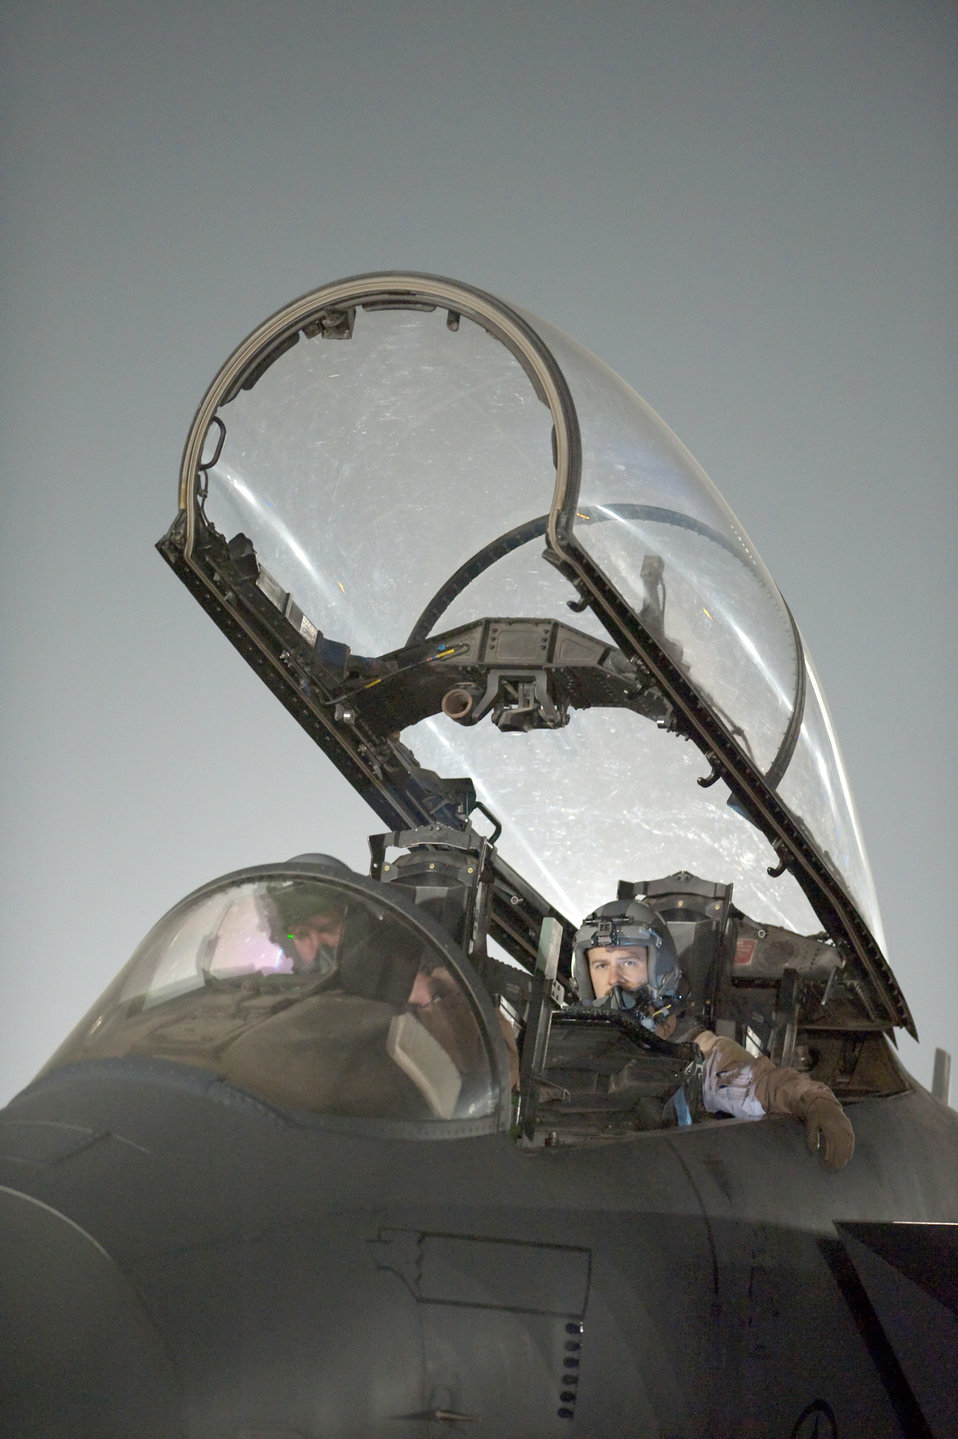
Mission preparation at Bagram

Capt. Kellen Sick and Maj. Aaron Ruona are ready to take off in their F-15E Strike Eagle on a combat mission Jan. 4, 2011, at Bagram Airfield, Afghanistan. Captain Sick and Major Ruona are with the 336th Expeditionary Fighter Squadron. The squadron performs close-air-support missions within the local area and is deployed from Seymour Johnson